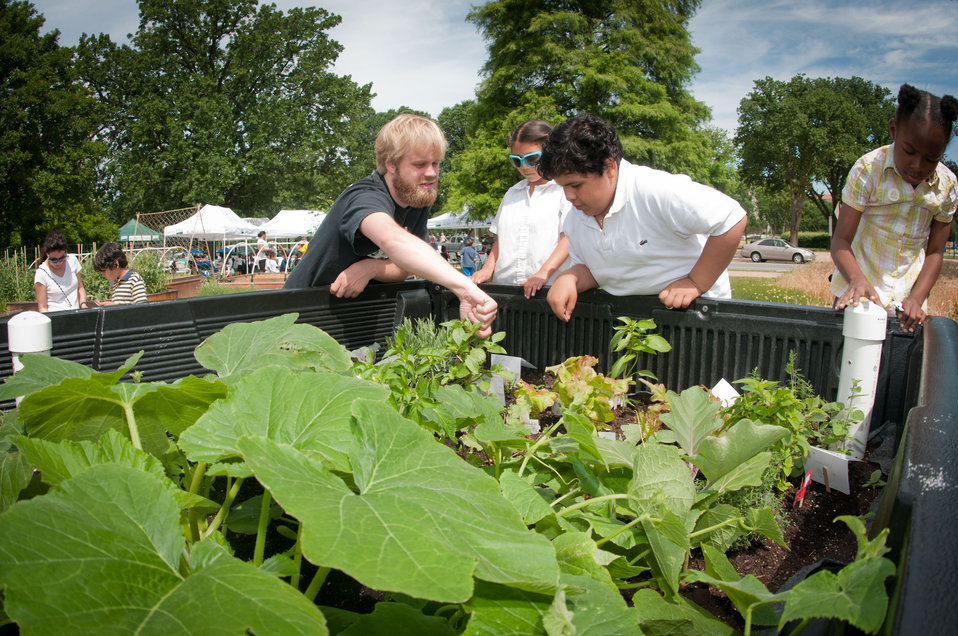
Stephen (black t-shirt) and students from Powell Elementary School in Washington, DC, hunt for herbs on a nearby table, during the USDA Farmers Market and the official kick off of the People's Garden Friday activities on Friday, June 3, 2011 in Washington, DC. More than 200 children participated in activities at several learning stations teaching them how to make planter pots out of household trash items; make salsa; experience the taste and smell of herbs; then search for those plants in the bed of Truck Farm, a mobile garden; and have a guided tour of the People’s Garden. For many, it was the first time to eat a pea from a pod, plucked from a vine. The adjacent USDA Farmers Market is located at the corner of 12th Street and Independence Avenue and will be open every Friday from 10:00 a.m. - 2:00 p.m. through November 18th. Special events will be happening every Friday at the market and at the People's Garden all season.